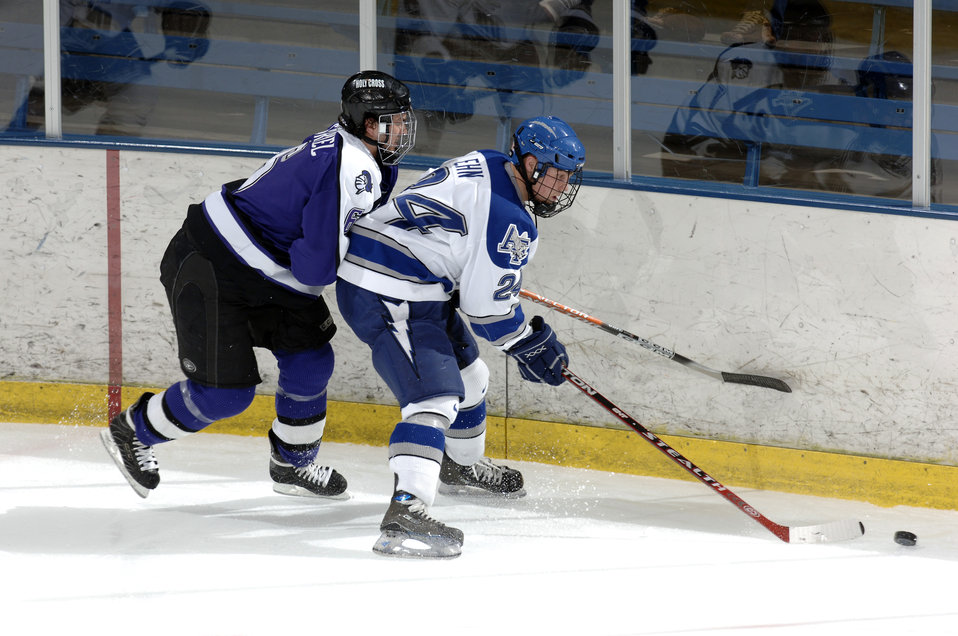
Air Force blanks Holy Cross, 3-0

Junior center Eric Ehn had two points as Air Force beat Holy Cross, 3-0, in the quarterfinals of the Atlantic Hockey Association Tournament. Ehn leads the nation with 62 points this season.